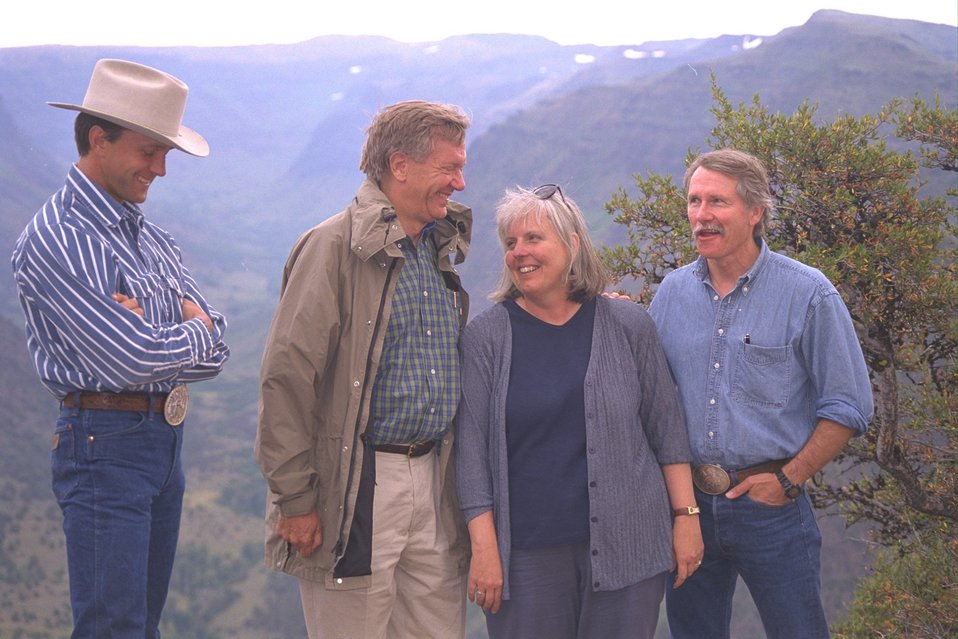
(left-right) Roaring Springs Ranch manager Stacy Davies, Secretary Babbitt, Elaine Zielinski, and Governor Kitzhaber at Big Indian Gorge overlook.